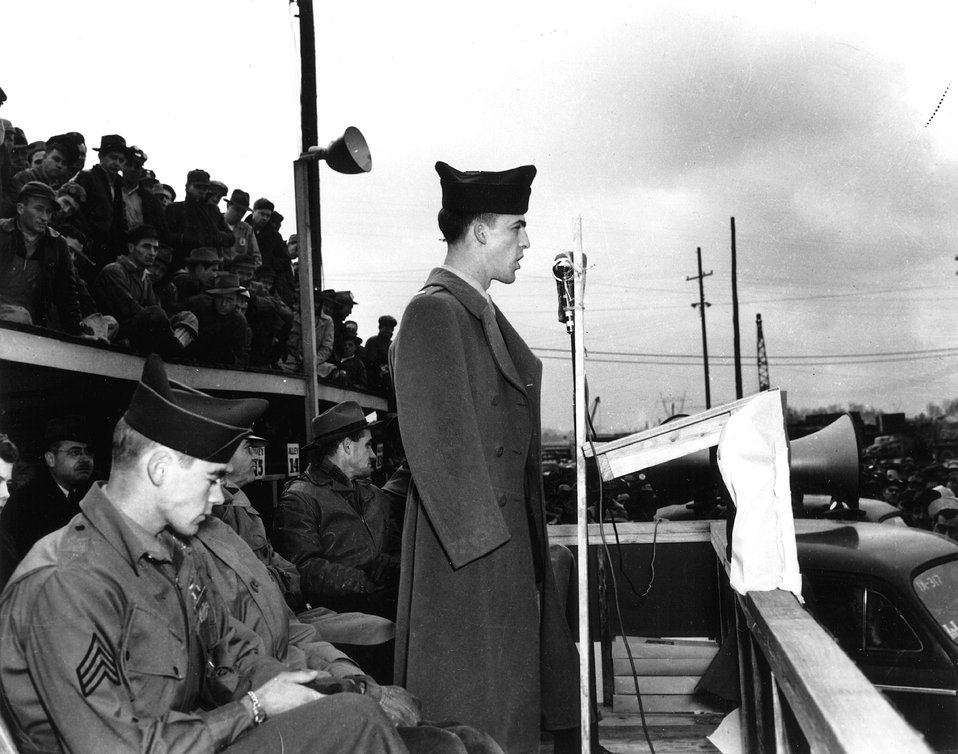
Vet talks with K-25 workers Bond Drive and Stay on Job. c. 1944